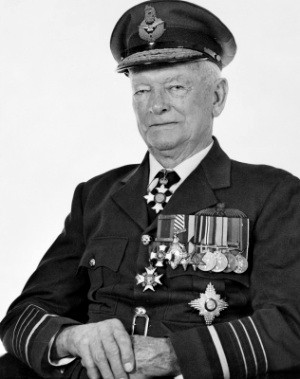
Air Chief Marshal Sir Frederick Scherger KBE CB DSO AFC